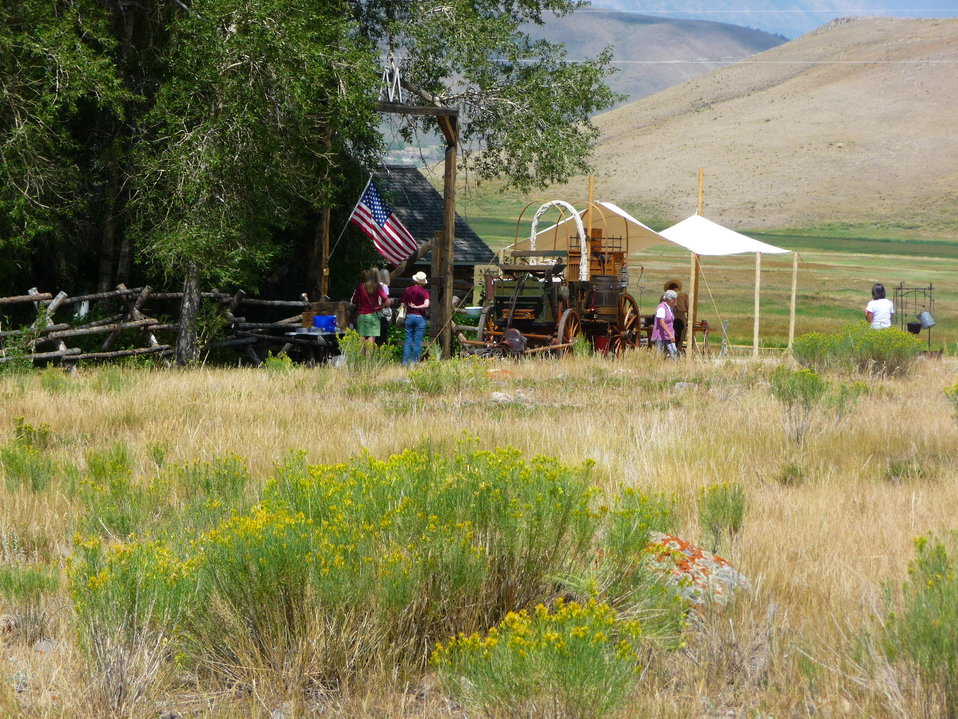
Come and Get It!

A chuckwagon cooking demonstration at the Historic Miller House was a popular event during the National Elk Refuge's centennial weekend.

Credit: USFWS / Chuck Mulcahy, National Elk Refuge volunteer